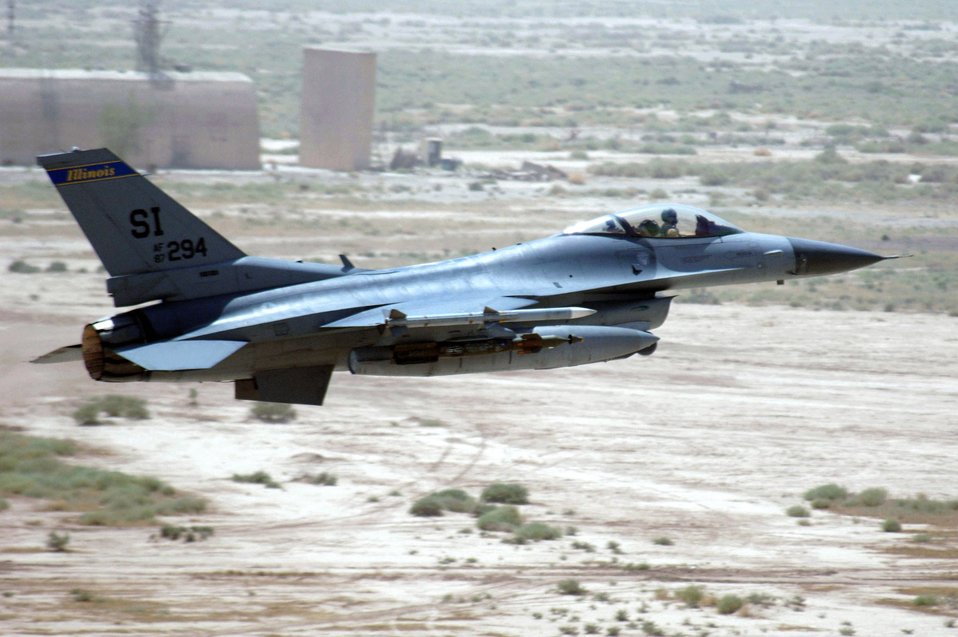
July 19 airpower summary: F-16s provide armed aerial security

An F-16 Fighting Falcon assigned to the 332nd Expeditionary Fighter Squadron at Joint Base Balad, Iraq, takes off on an Operation Iraqi Freedom mission. The F-16 provides close-air support and